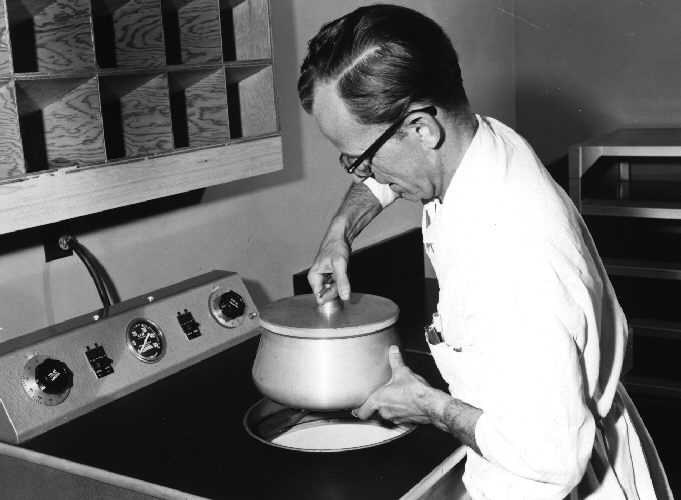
Laboratory Techniques-Centrifuging.